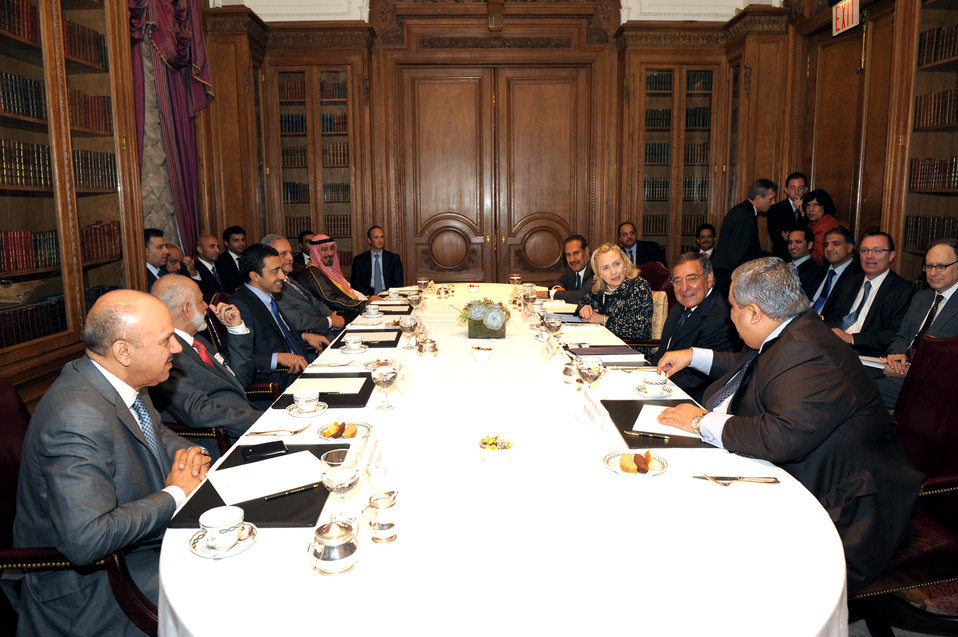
Secretary Clinton Participates in the Gulf Cooperation Council Meeting

U.S. Secretary of State Hillary Rodham Clinton participates in the Gulf Cooperation Council Meeting in New York, New York, on September 23, 2011.